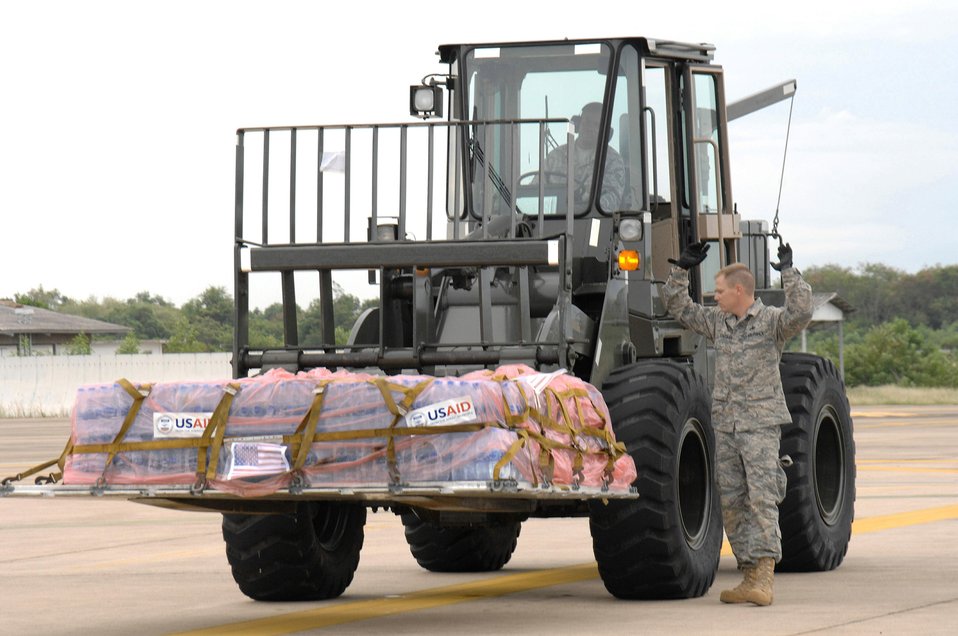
Airmen support Burma relief effort

Master Sgts. Todd Kneisly and Don Gambles transport a pallet of bottled water weighing in at approximately 4,000 pounds to a C-130 Hercules for humanitarian relief to victims of Burma May 12 at Utapao Air Base, Thailand. Approximately 45 servicemembers from Andersen Air Force Base, Guam, arrived in Thailand May 8 to offer their assistance with a water purification unit and two airfield opening/operating teams. Sergeant Kneisly and Gambles are assigned to the 36th Mission Response Squadron from Andersen AFB.